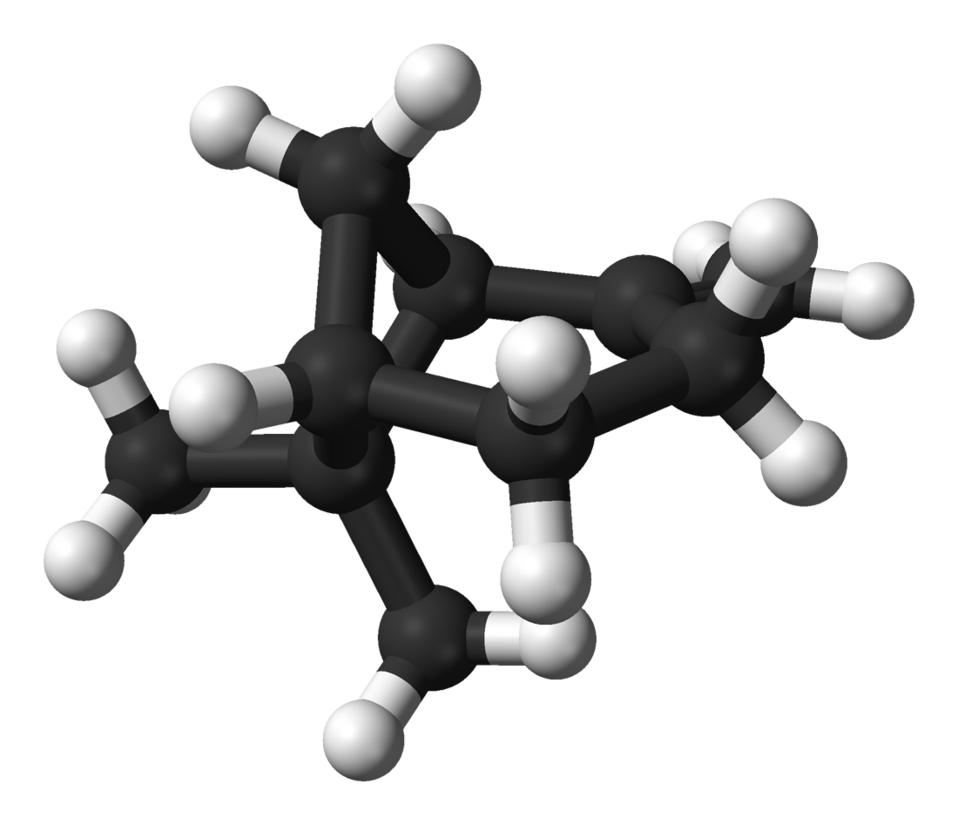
Ball-and-stick model of the (1S)-(−)-β-pinene molecule, C10H16. X-ray crystallographic data from A. D. Bond and J. E. Davies (November 2001). '(1S)-(−)-β-Pinene'. Acta Cryst. 'E57' (11): o1041-o1042. DOI:10.1107/S1600536801016427. Image generated in Accelrys DS Visualizer.